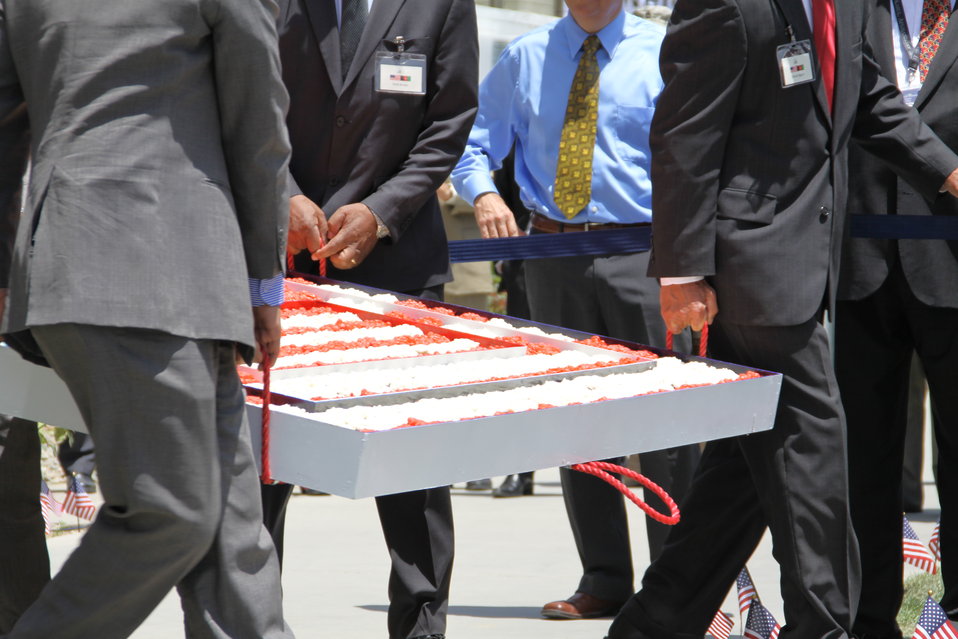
Kabul Official July 4th Celebration